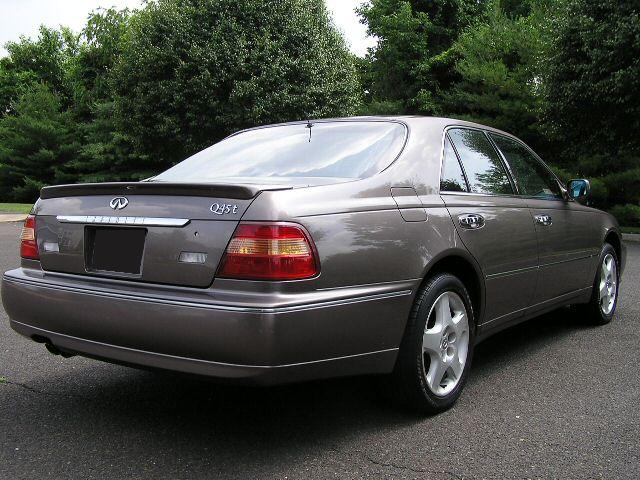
2000 Infiniti Q45t Photographed in Philadelphia, PA.